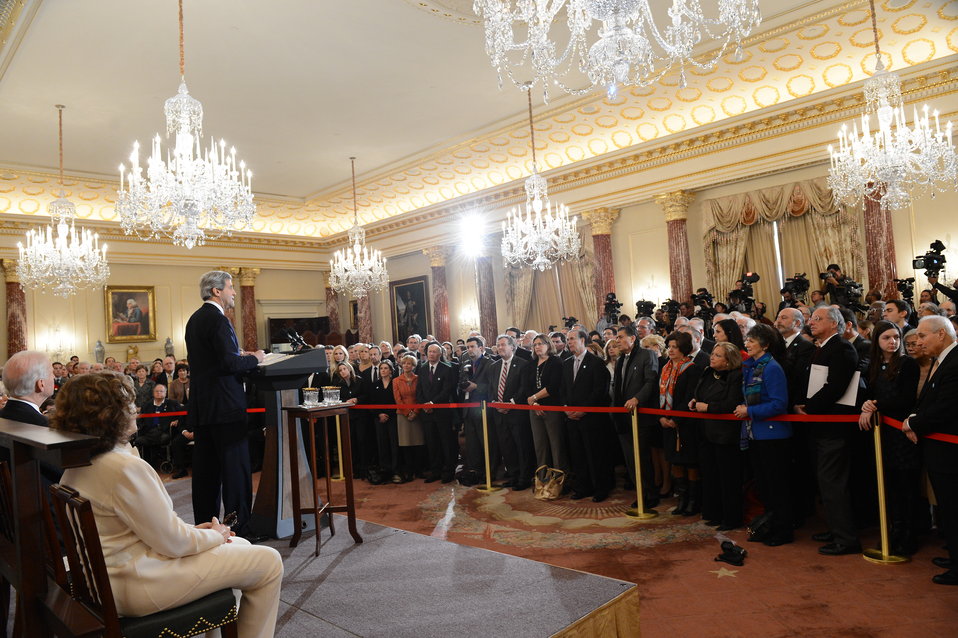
Secretary Kerry Delivers Remarks

U.S. Secretary of State John Kerry’s delivers remarks during his ceremonial swearing-in at the U.S. Department of State in Washington, D.C., February 6, 2013.